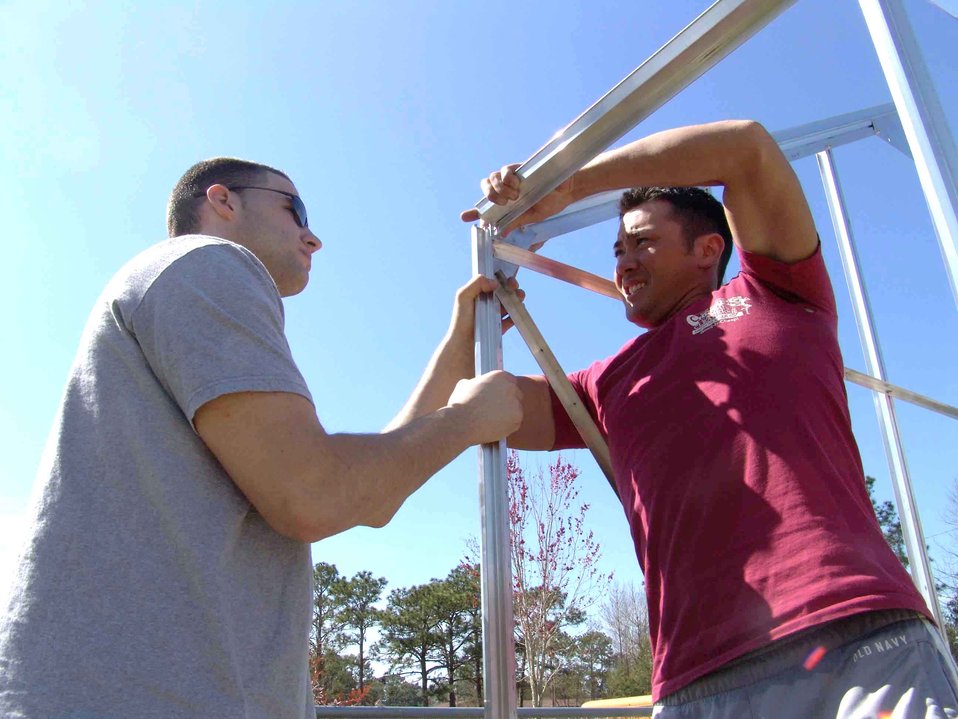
Airmen help local school rebuild greenhouse

VALPARAISO, Fla. -- Airmen 1st Class Brian Wiechec (left) and Daniel Springer connect two sides of a greenhouse frame at an elementary school here. Hurricane Ivan destroyed the school's greenhouse in September. More than 15 Airmen from nearby Elgin Air Force Base and Duke Field helped build a replacement. Airmen Wiechec and Springer are assigned to the 716th Maintenance Squadron at Duke.